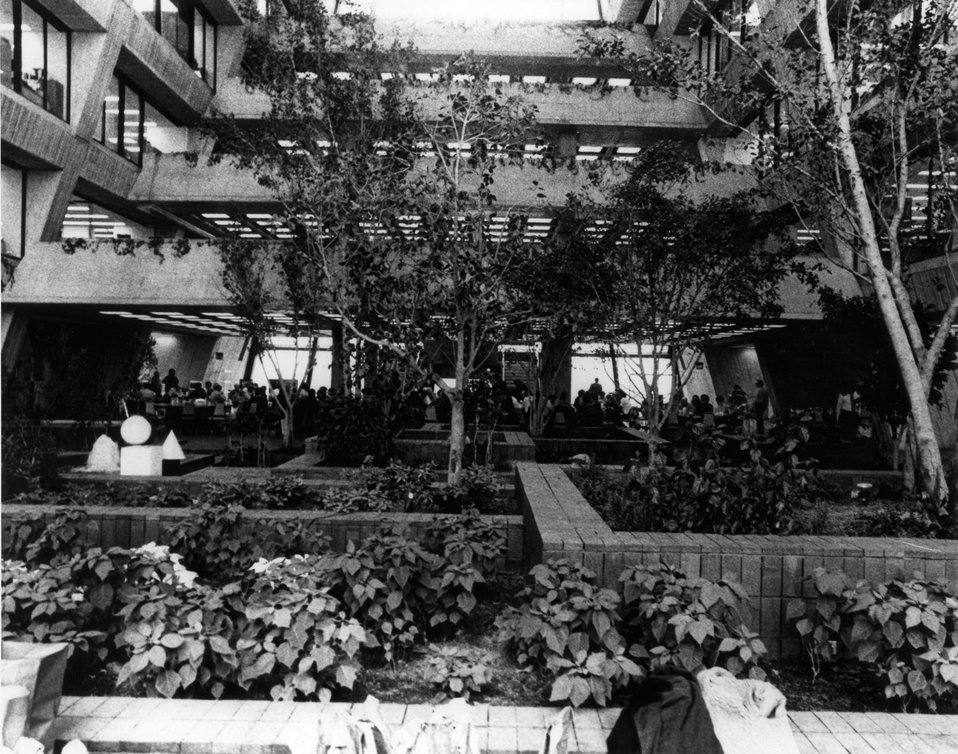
The Atrium of the Central Laboratory, National Accelerator Laboratory, one of the largest of its kind in the world. c. 1974